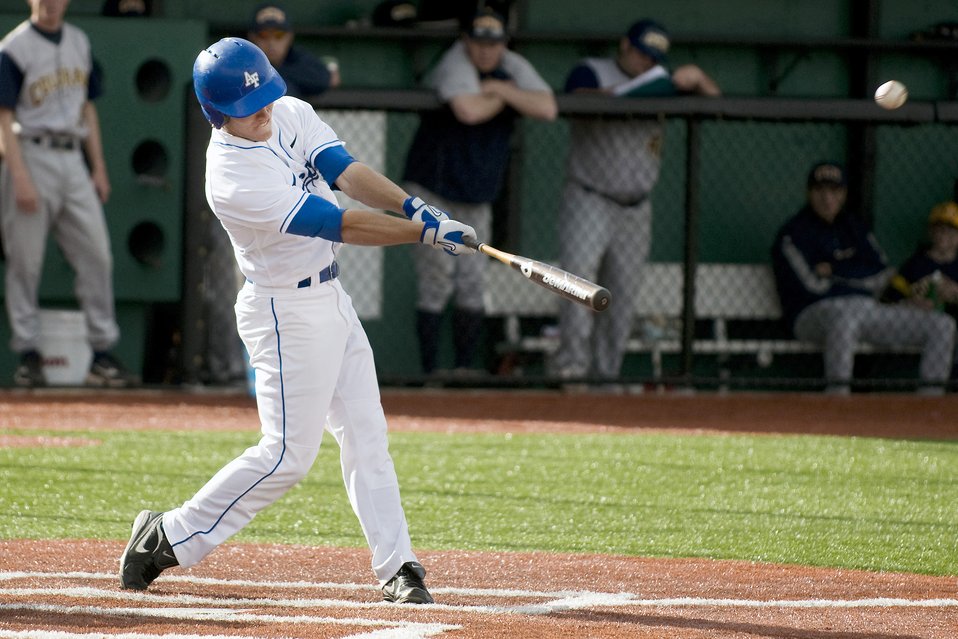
Falcons defeat the Cougars

Air Force freshman right fielder Garret Custons connects for a home run and one of his nine RBIs during the Falcons March 30, 2010 contest against Colorado Christian University held at the U.S. Air Force Academy's Falcon Field in Colorado. The Falcons defeated the Cougars 25-7.